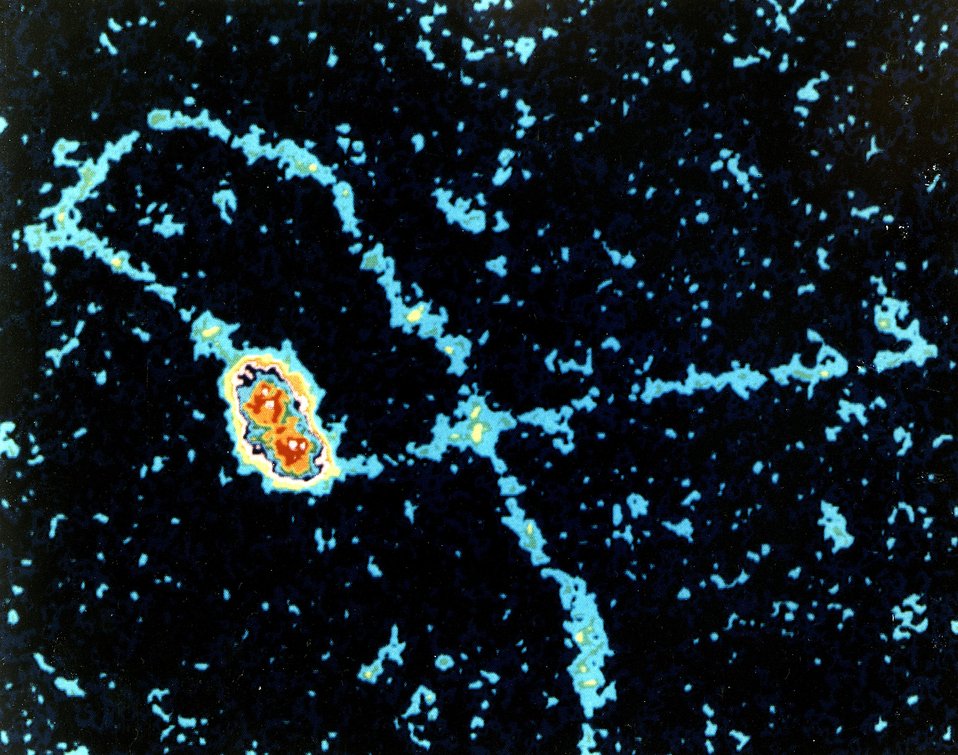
DNA replication is one of several central genetic processes that demand an association between proteins and DNA. With images such as this, the scanning transmission electron microscope (STEM) has revealed many of the details of DNA replication in the tumor virus SV40. Twelve subunits of a protein known as T antigen assemble themselves in two ringlike hexamers around the DNA, precisely at the origin of replication.